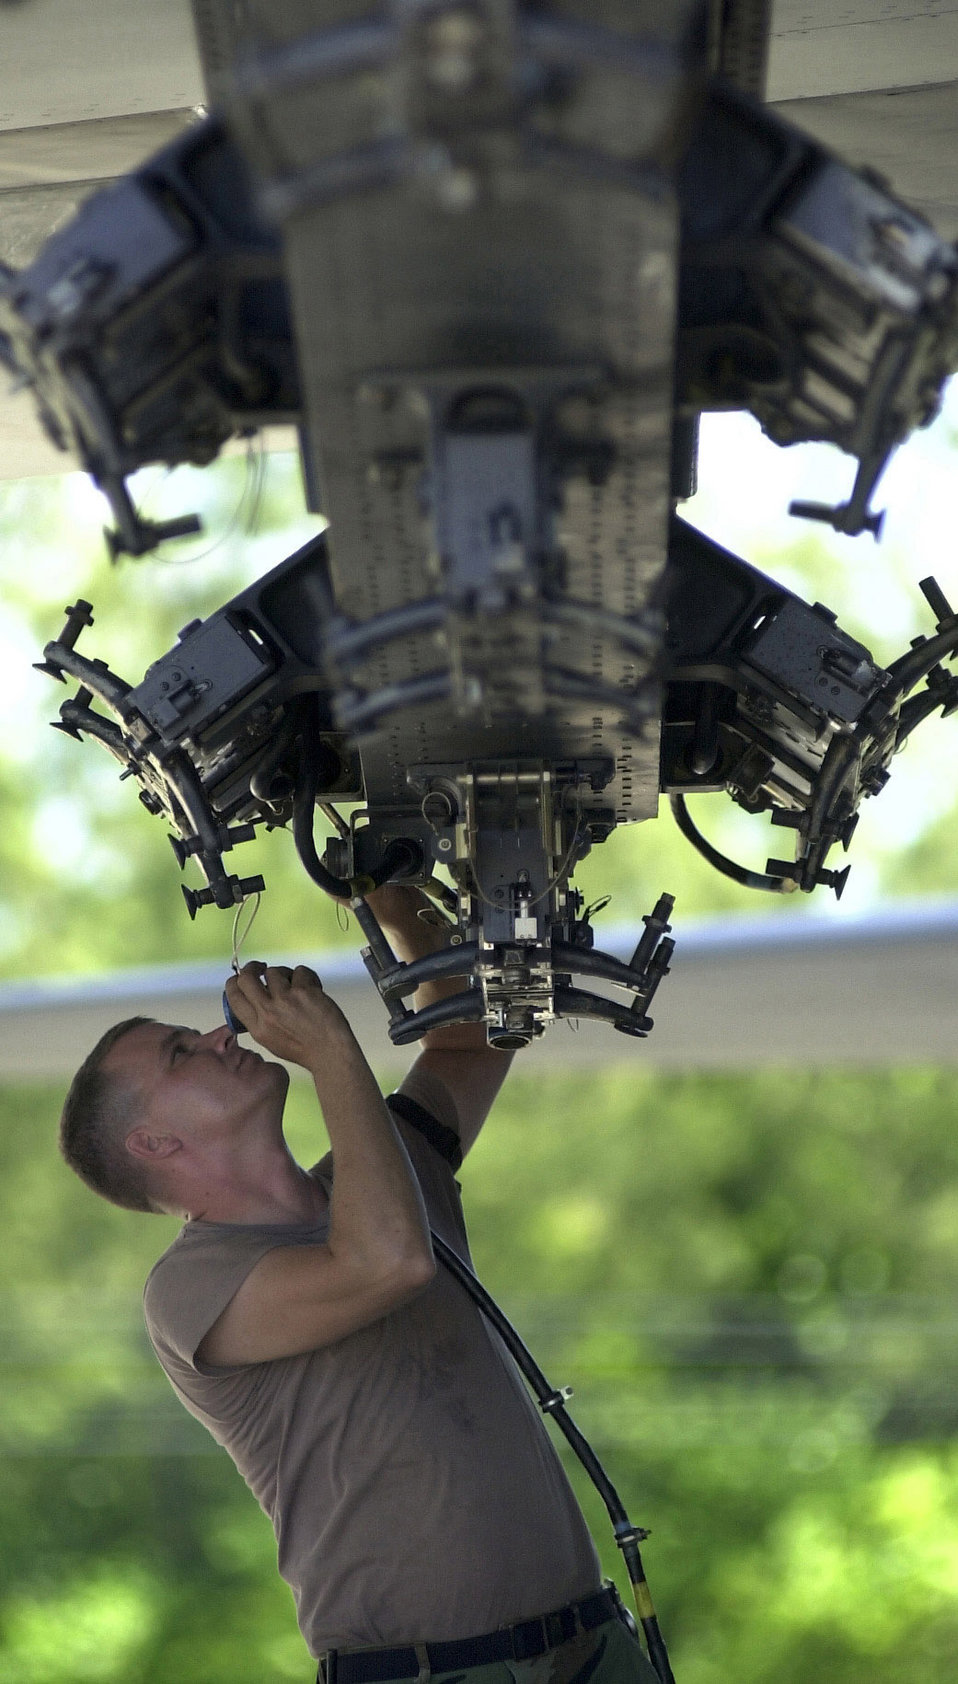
Bomb rack

OPERATION ENDURING FREEDOM -- An Air Force munitions specialist from the 28th Air Expeditionary Wing changes the configuration of a B-52H Stratofortress external bomb rack from Joint Direct Attack Munitions to conventional munitions at an operating location in support of Operation Enduring Freedom on Nov. 28. In the first 52 days of Operation Enduring Freedom, the Air Force flew more than 4,600 sorties, almost half of all OEF missions. Air Force bombers, fighters, airlifters, tankers and Intelligence, Surveillance and Reconnaissance assets are in action every day.